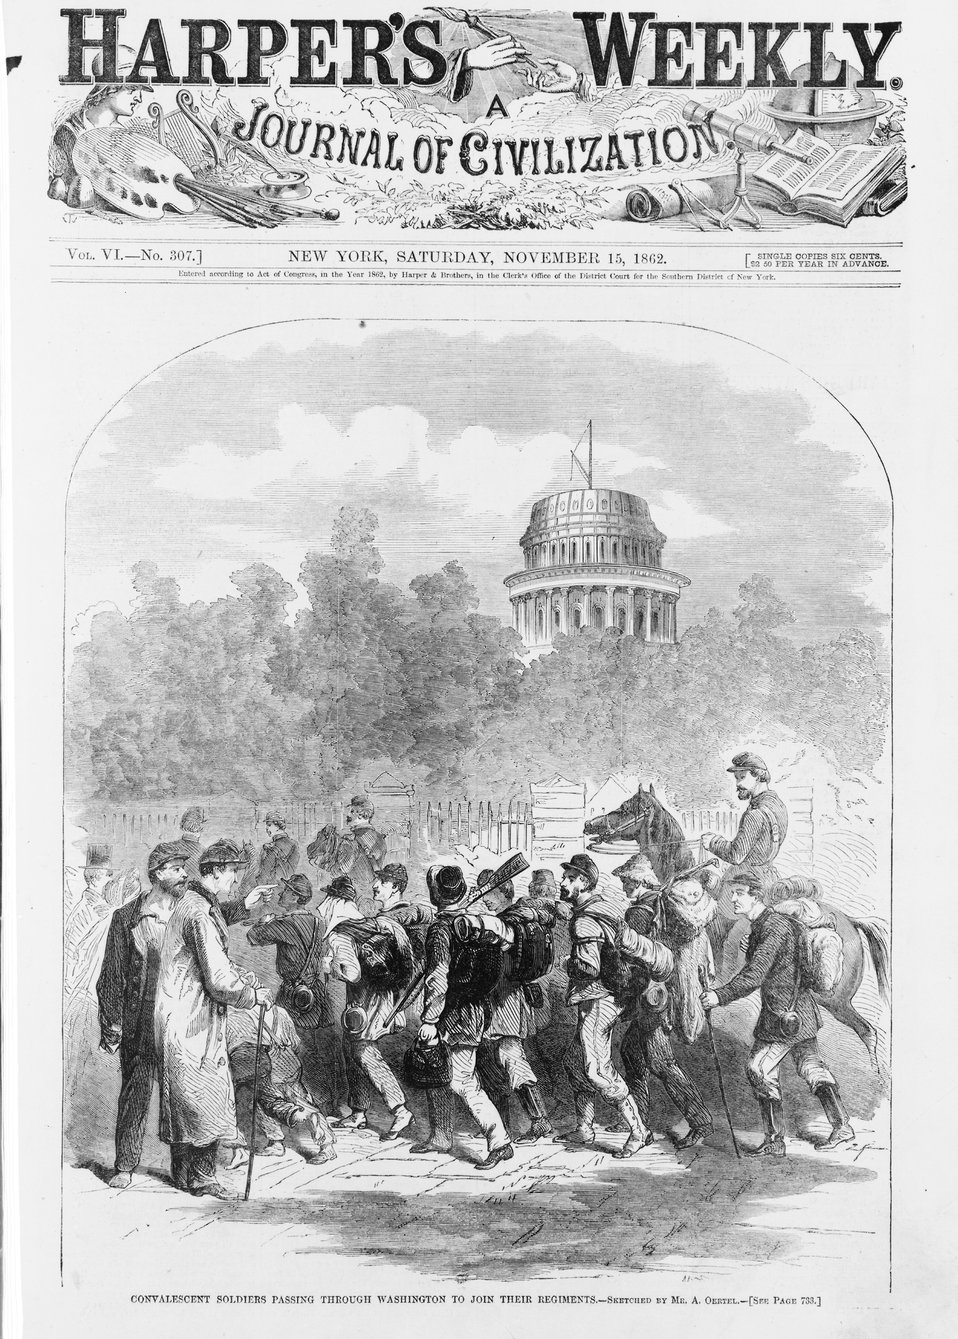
Wounded Soldiers in Washington November 1862

From Harper's Weekly, November 15, 1862. The 2nd Battle of Manassas occurred in 1862, from which the Union retreated to Washington, D.C. and the Capitol became a hospital for causalities.